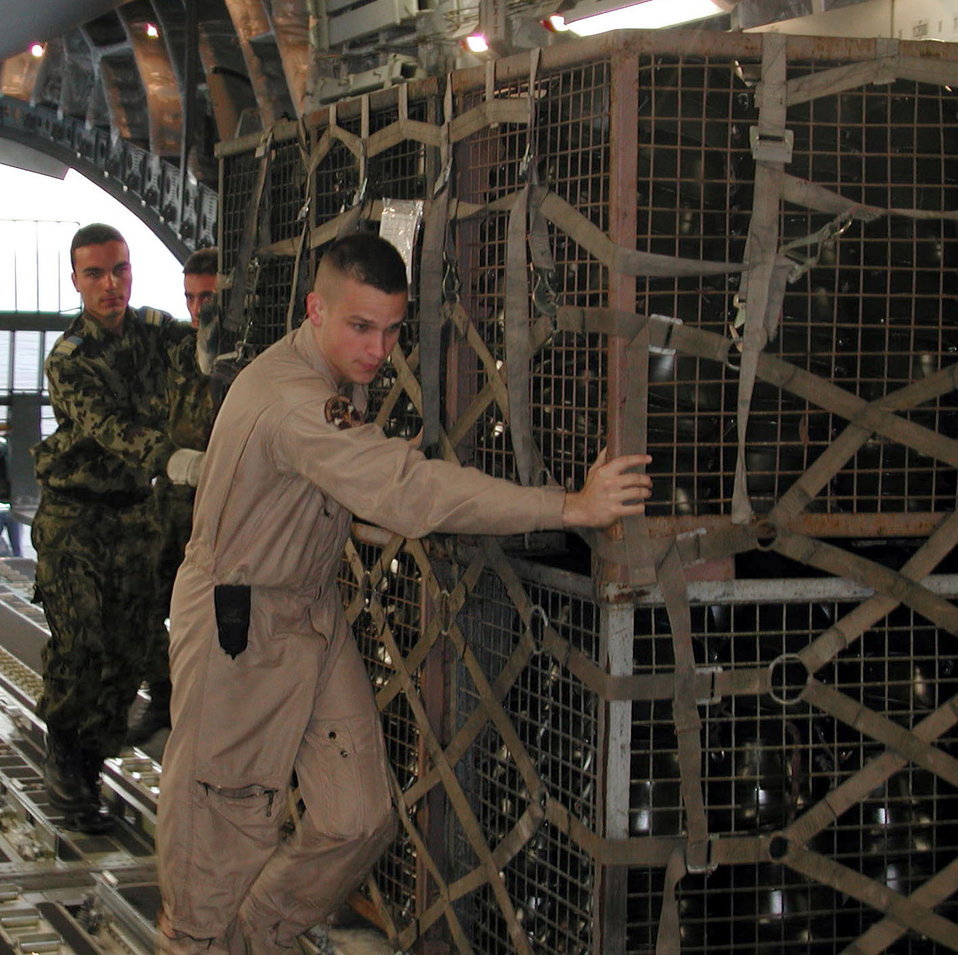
Airmen deliver 35,000 helmets to Afghanistan

MIHAIL KOGALNICEANU AIR BASE, Romania -- Senior Airman Derrick Dirmeyer helps Romanian airmen load 17 pallets of military helmets onto a C-17 Globemaster III here June 24. The helmets were donated by the Romanian government to the Afghan army and flown to Afghanistan by a U.S. Air Force Reserve aircrew from the 97th Airlift Squadron at McChord Air Force Base, Wash. Airman Dirmeyer is a crew chief assigned to the 62nd Aircraft Maintenance Squadron at McChord AFB.